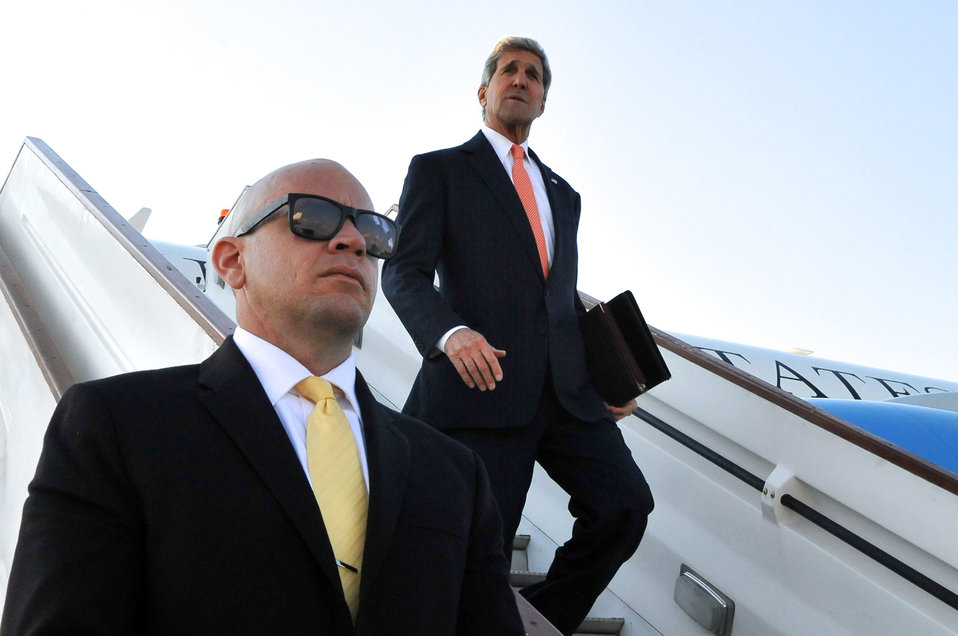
Secretary Kerry Arrives in London For Middle East, Syria, Ukraine Meetings

U.S. Secretary of State John Kerry passes an Air Force security guard as he steps off his plane after arriving in London, United Kingdom, on May 14, 2014, for a series of meetings focused on the Middle East, Syria, and Ukraine.